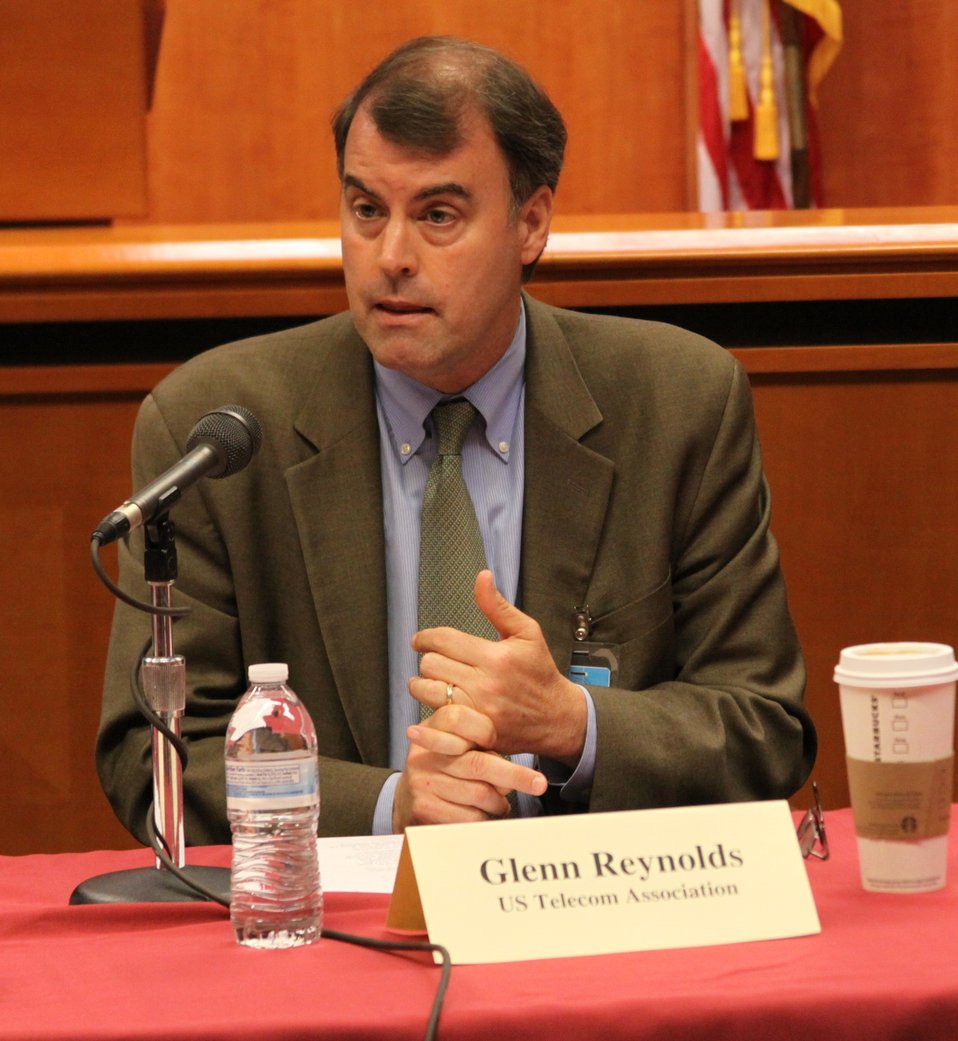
April 17, 2013 Bill Shock and Cramming Workshop